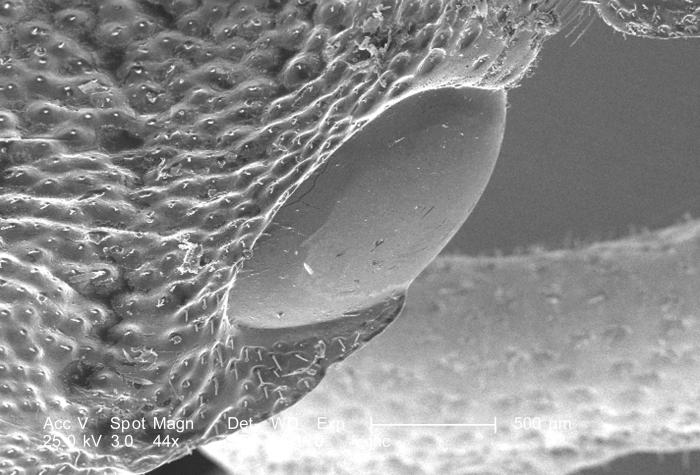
At a low magnification of 44X, this scanning electron micrograph (SEM) focused on the head region of an adult 'figeater' beetle, Cotinis mutabilis. In this particular view, one of the insect's two compound eyes, i.e., left eye, is visualized. For even greater magnifications of the surface of the eye, see PHIL 9950, 9951, and 9952.